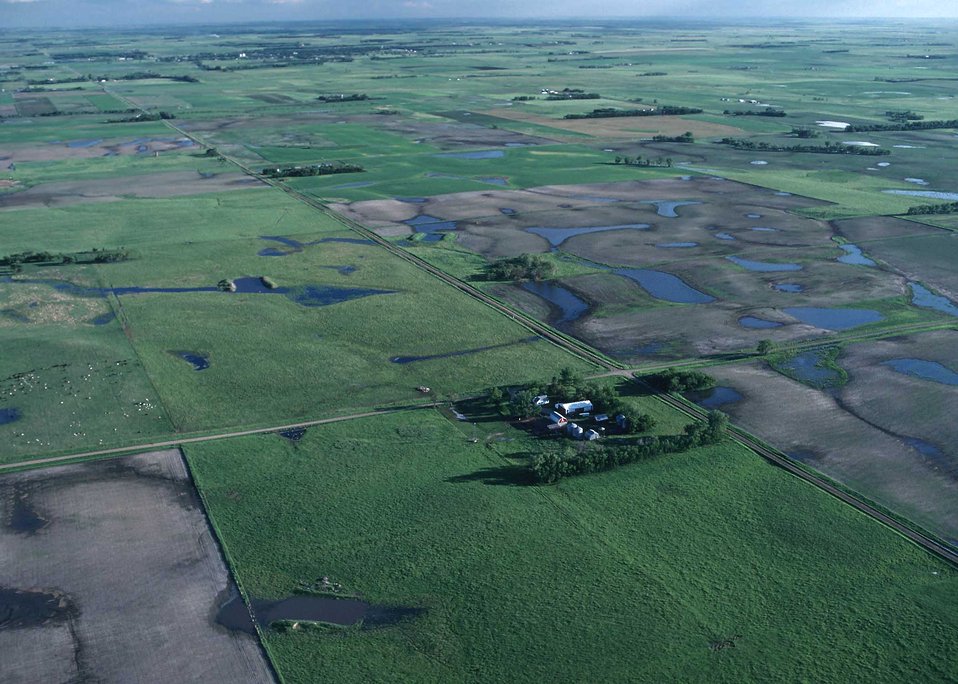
Prarie potholes provide an abundance of vital habitat for wildlife.